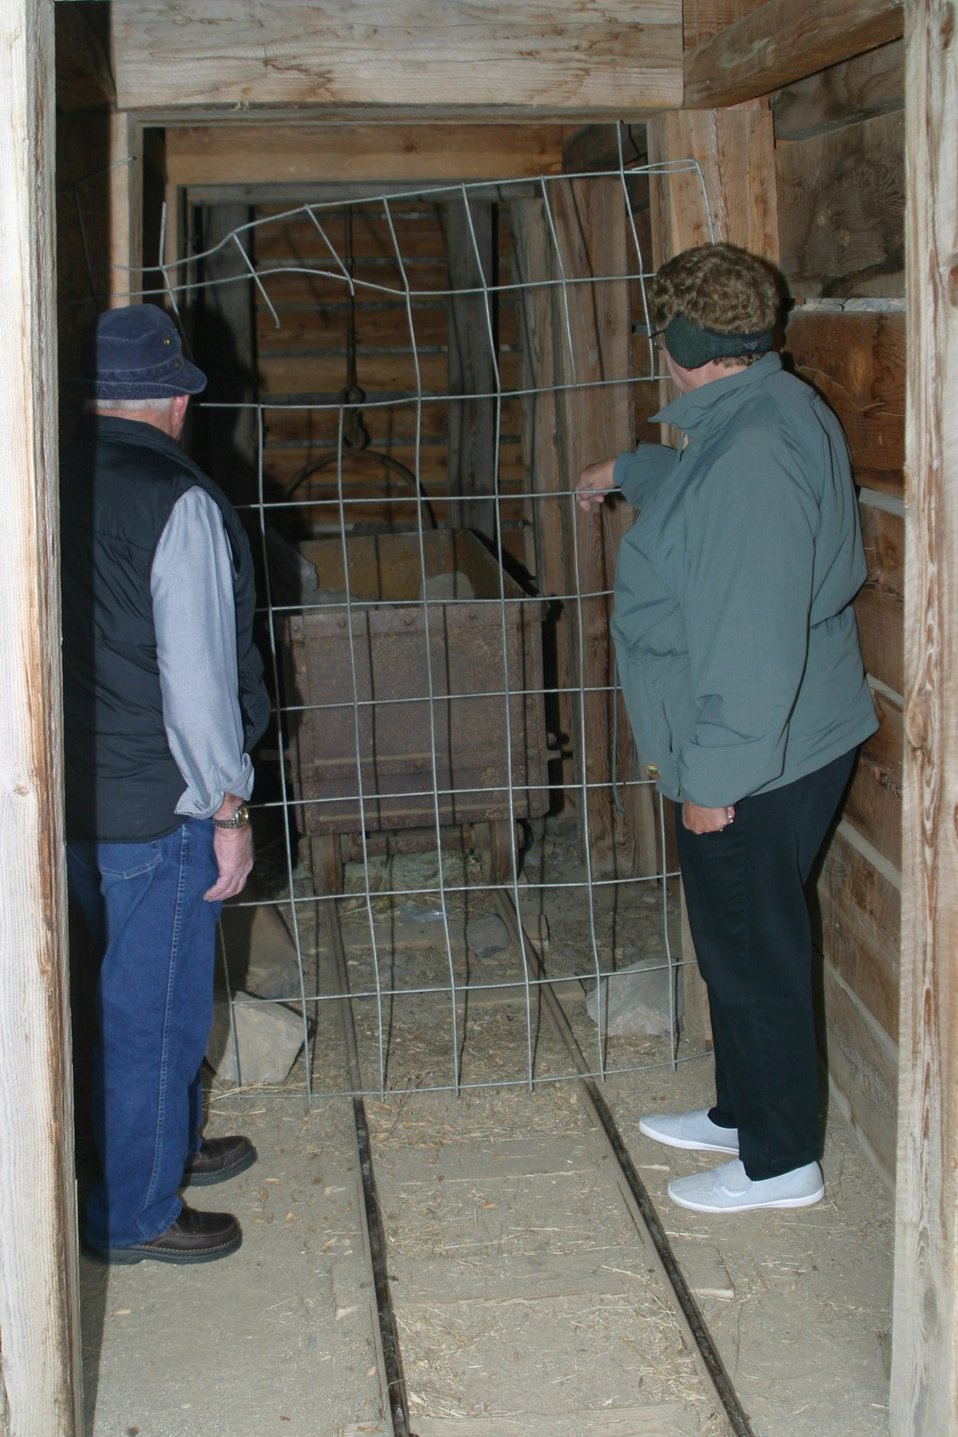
A replica of an old hard rock mine give visitors a sense of historic mining in eastern Oregon.